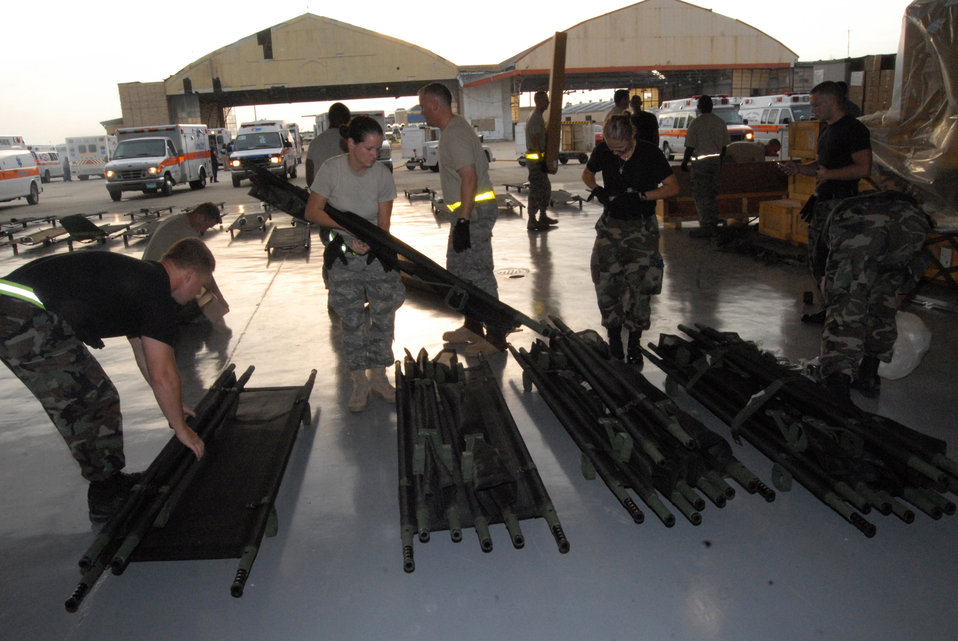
Hurricane Gustav

Airmen from the 43rd Aeromedical Evacuation Squadron and 43rd Medical Group, Pope Air Force Base, N.C., build litters in preparation for patient arrival at Lakefront Airport in Louisiana on the evening of August 30. Pope Airmen treated more than 100 patients at the airport on August 30 and 31.